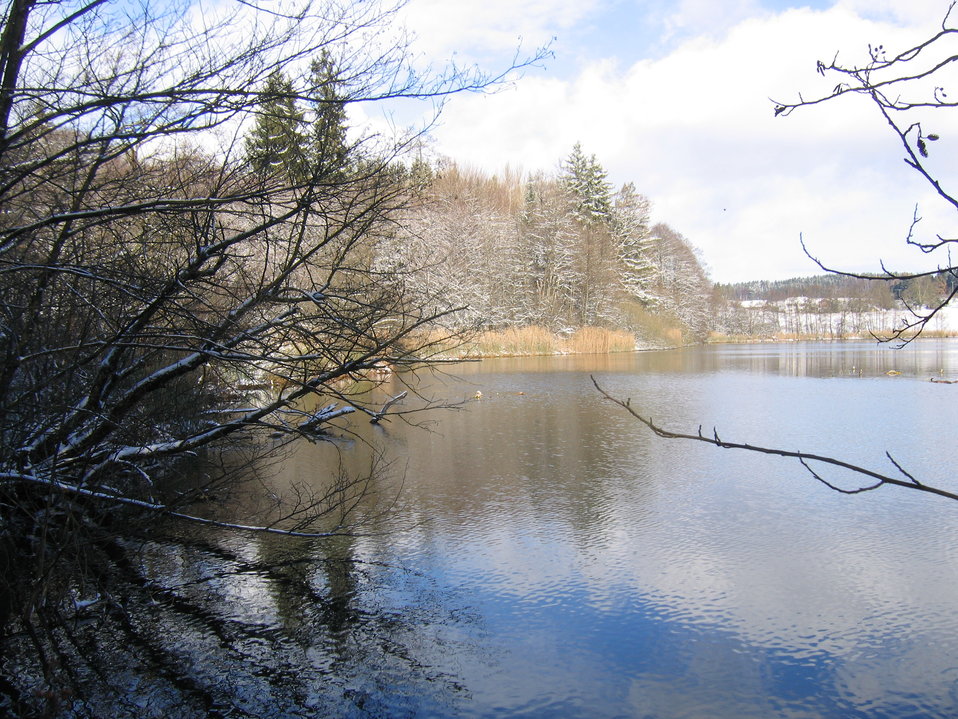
Deutsch: Degersee